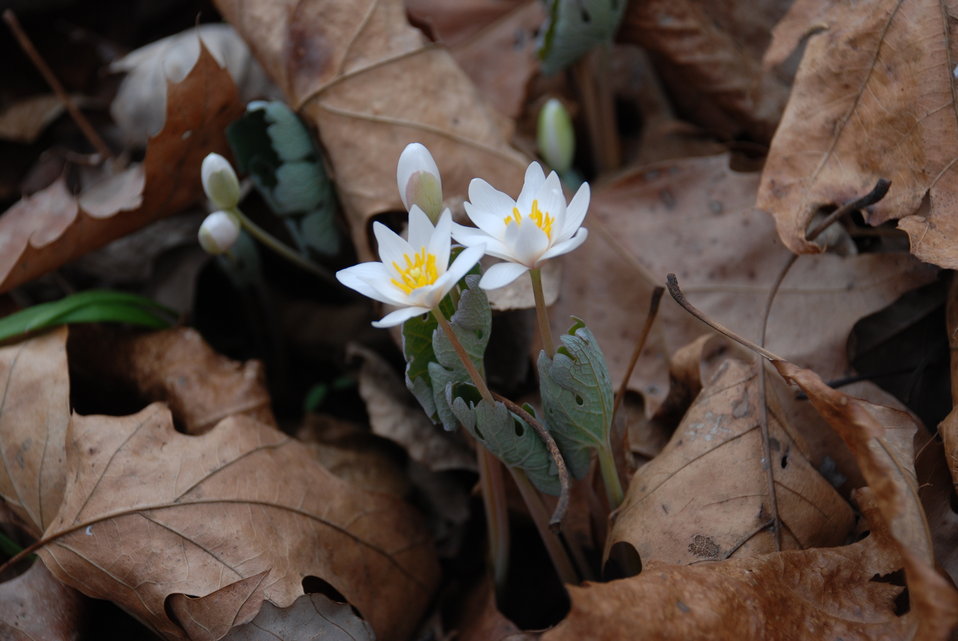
Bloodroot (Sanguinaria candensis)

Bloodroot found outside Madison Saltpeter cave.